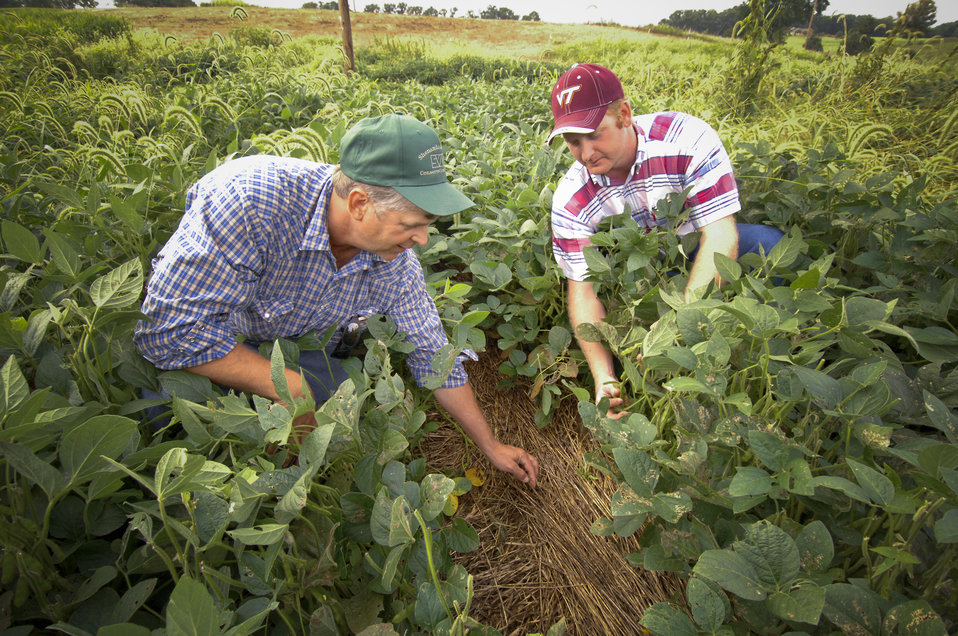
Farmers in Rockingham County, Virginia check the results of no-till farming in their fields on September 9, 2008, as part of their participation in the U.S. Department of Agriculture (USDA) Natural Resource Conservation Service (NRCS) Chesapeake Bay Watershed Initiative (CBWI). CBWI is voluntarily program that farmers, ranchers and forestland owners install conservation practices on hundreds of thousands of acres annually to help support rural economies, protect wildlife habitat and improve water quality in the Chesapeake Bay Watershed. No-till farming is a way of growing crops from year to year without disturbing the soil through tillage. No-till is an agricultural technique, which increases the amount of water and organic matter (nutrients) in the soil and decreases erosion.